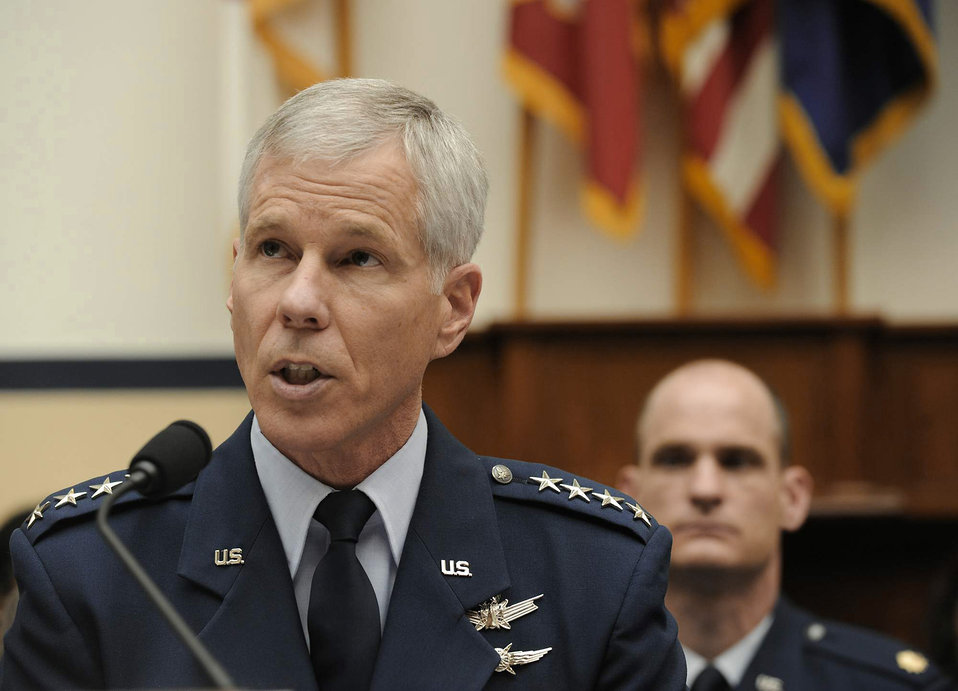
Air Force officials take space budget, acquisition strategy to Capitol Hill

Gen. William Shelton discusses the Air Force's Fiscal 2012 budget request for national security space activities before the Strategic Forces Subcommittee, part of the House Armed Services Committee, March 15, 2011, in Washington, D.C. General Shelton was joined by Air Force Undersecretary Eric Conaton; Ambassador Gregory Schulte, the deputy assistant secretary of Defense for Space Policy; and Betty Sapp, the National Reconnaissance Office principal deputy director. Rep. Mike Turner chaired the subcommittee. General Shelton is the Air Force Space Command commander.